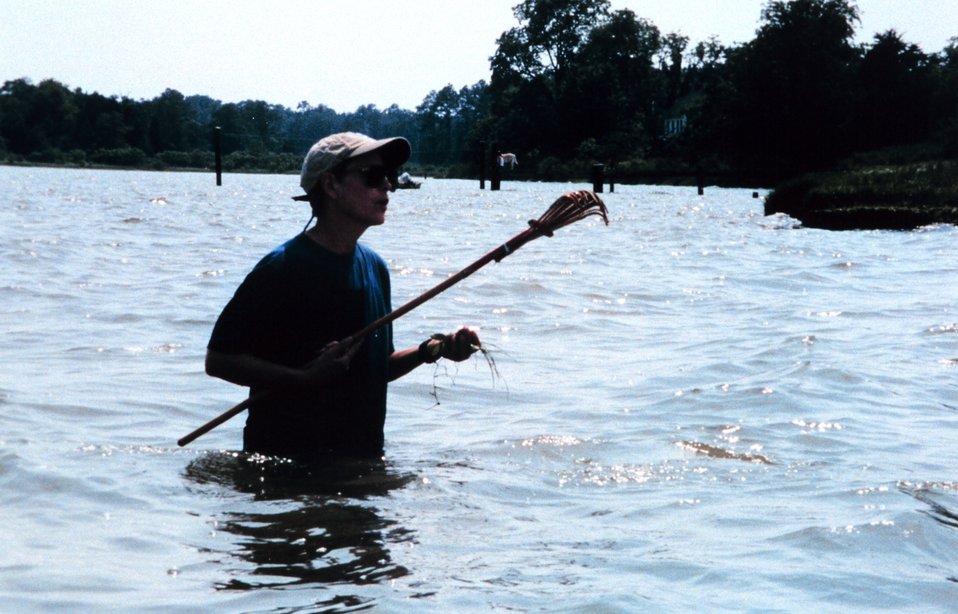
Searching for submerged aquatic vegetation (SAV's) in the Tred Avon River. Part of an annual Bay-wide ground-truthing effort.